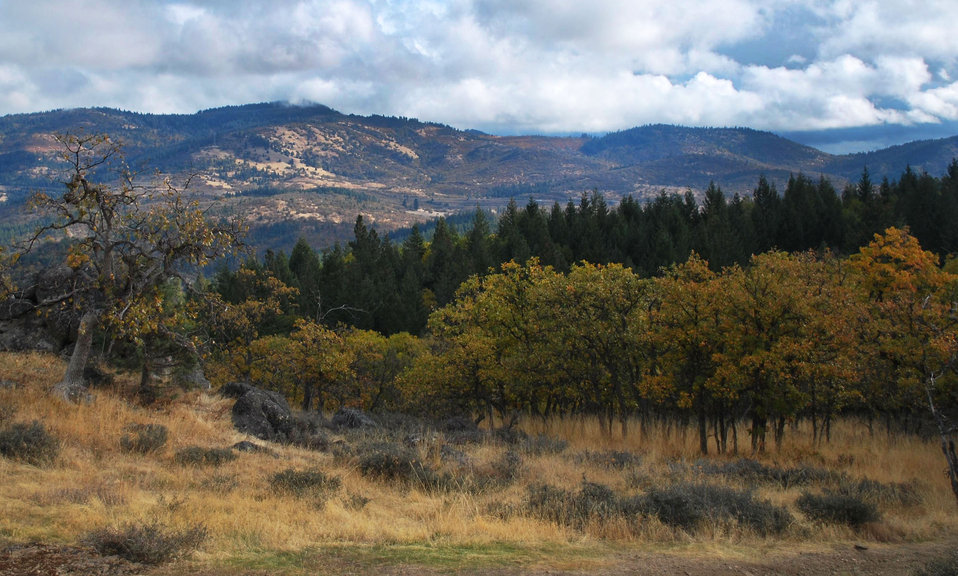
Colestin Valley facing south